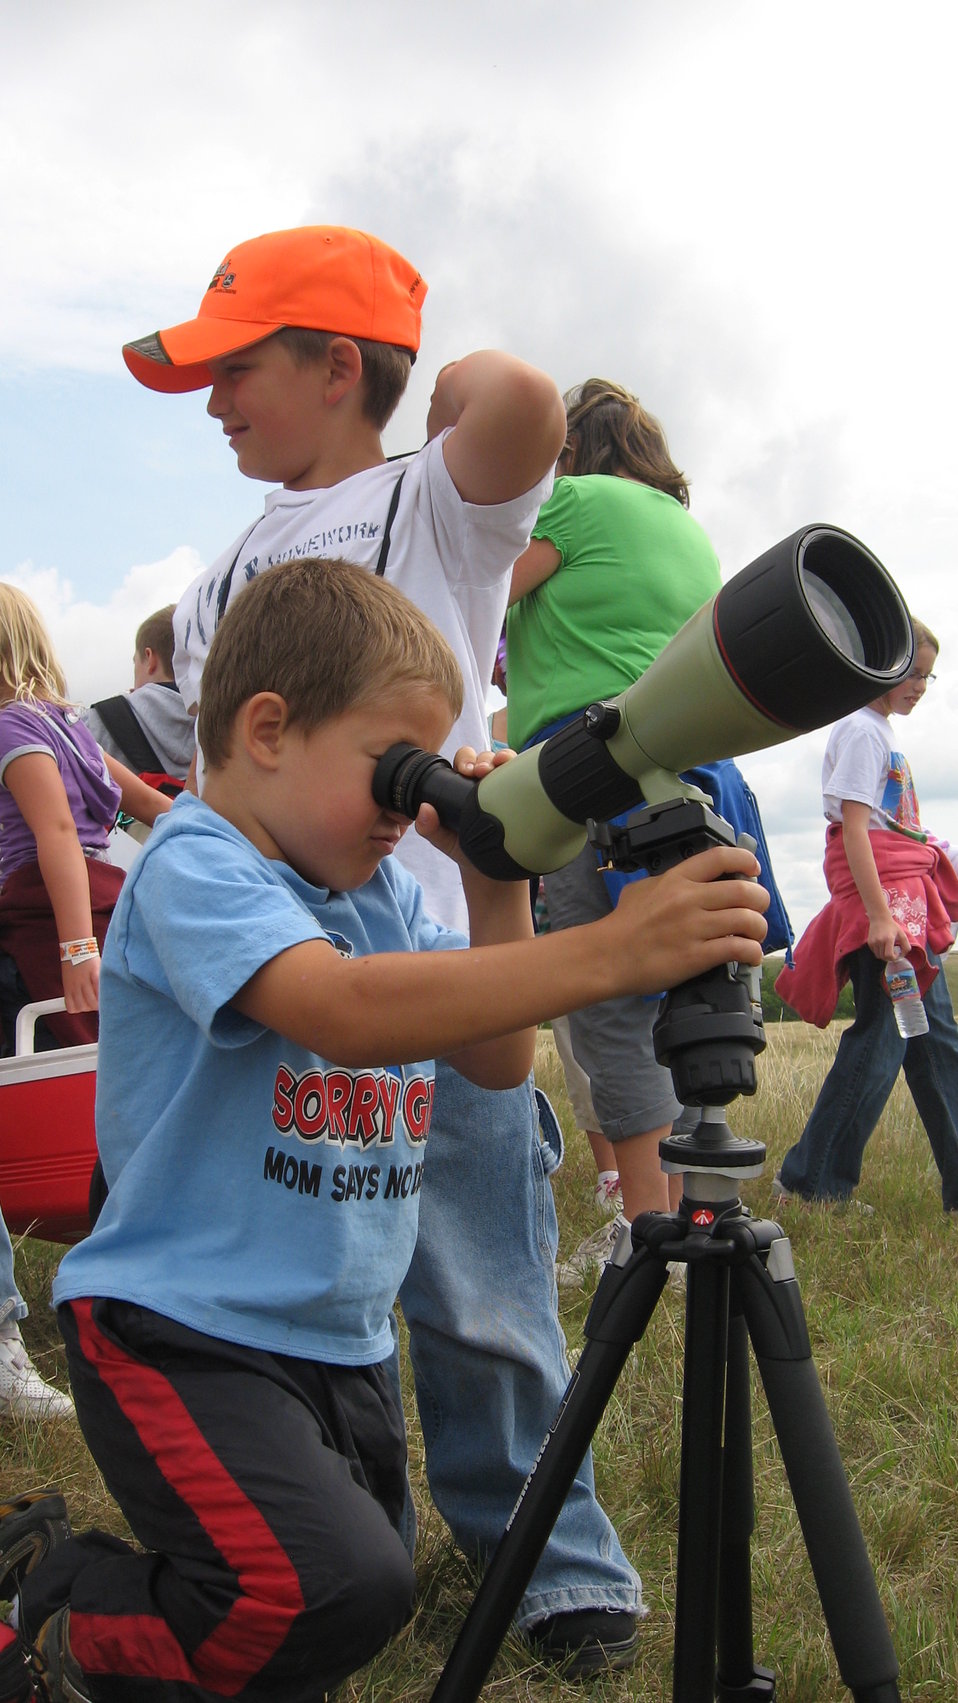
Getting a Better View

Kenmare Library Summer Reading Group visits the refuge every summer for their end of program party. Youth are given disposable cameras, paper and colored pencils to help them explore.